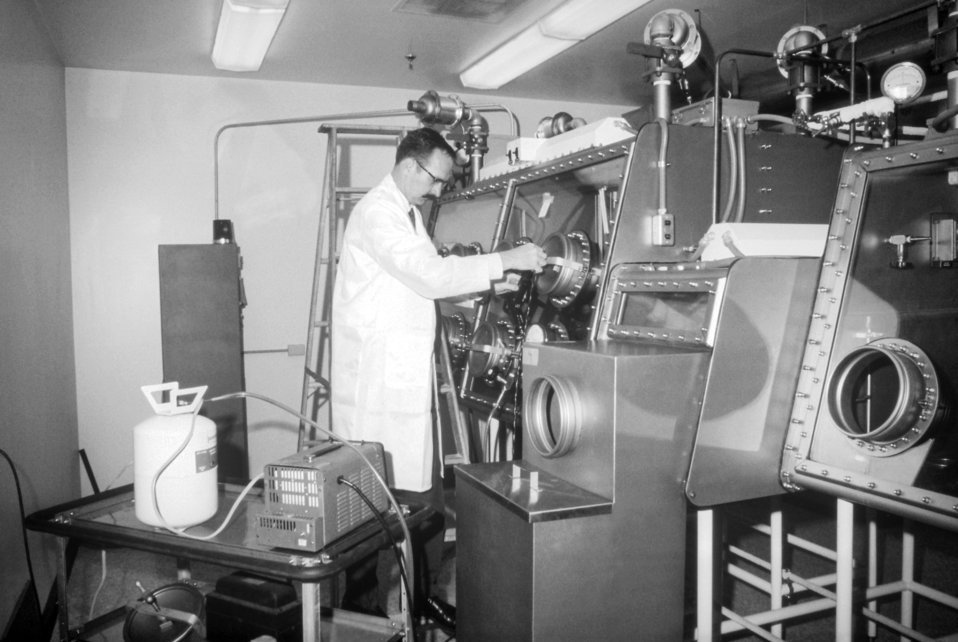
A 1970 photograph within the Maximum Security Lab.